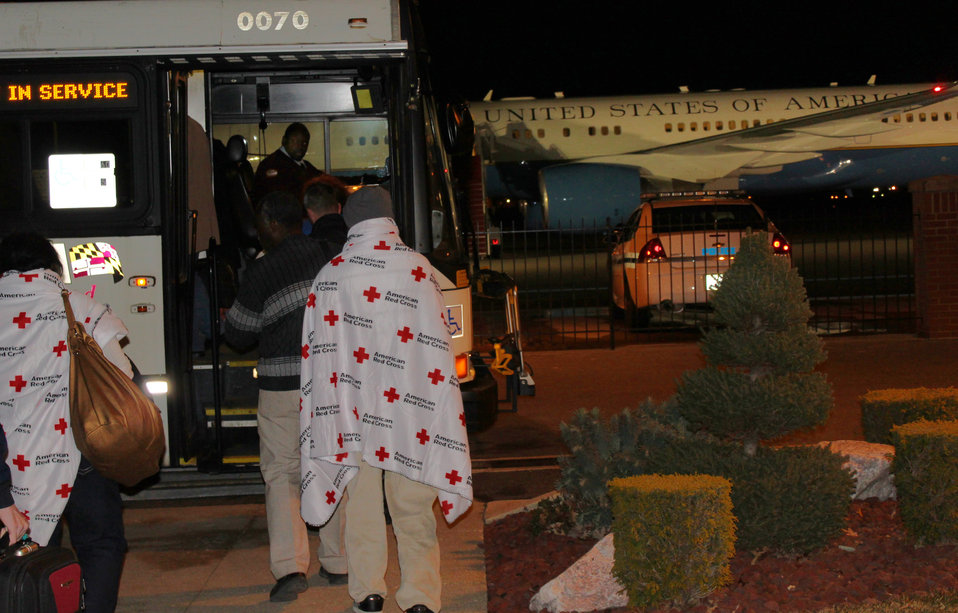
Haitian earthquake survivors arrive at Joint Base Andrews

After arriving at Joint Base Andrews on an 89th Airlift Wing C-32, 22 survivors of the 7.0-magnitude earthquake that hit Haiti Jan. 12 board a bus headed for a nearby hotel Jan.17, 2010. The survivors were met upon arrival here by a medical team consisting of 79th Medical Wing personnel, Prince George's County emergency technicians and Red Cross workers who ensured the passengers were in good health.